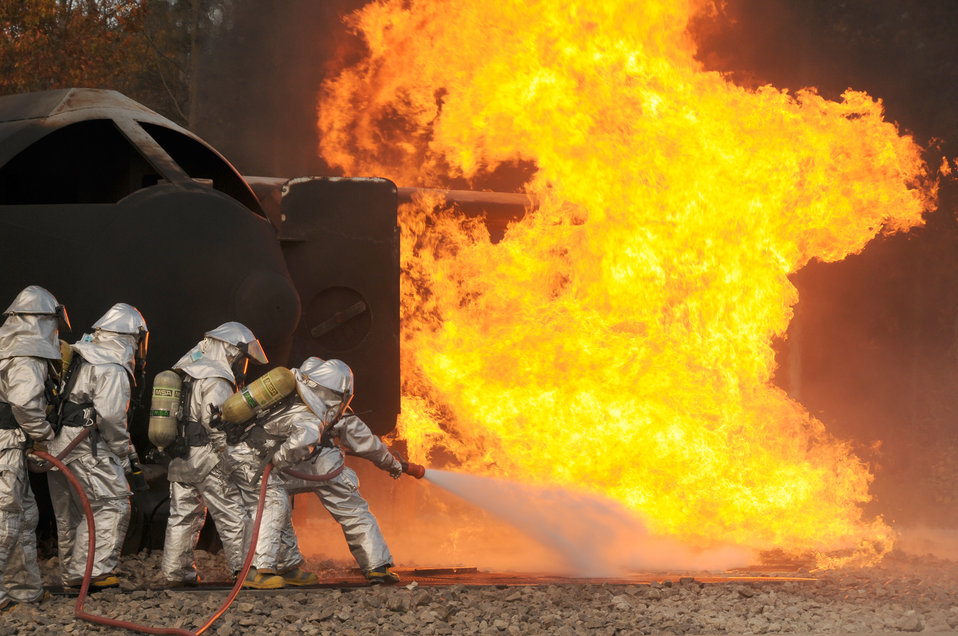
Firefighters sharpen their skills

Firefighters from the Ohio Air National Guard's 180th Fighter Wing extinguish an aircraft fire during a training exercise Oct. 16, 2010, at the Phelps Collins Combat Readiness Training Center in Alpena, Mich. They are doing annual training to prepare for various rescue situations.